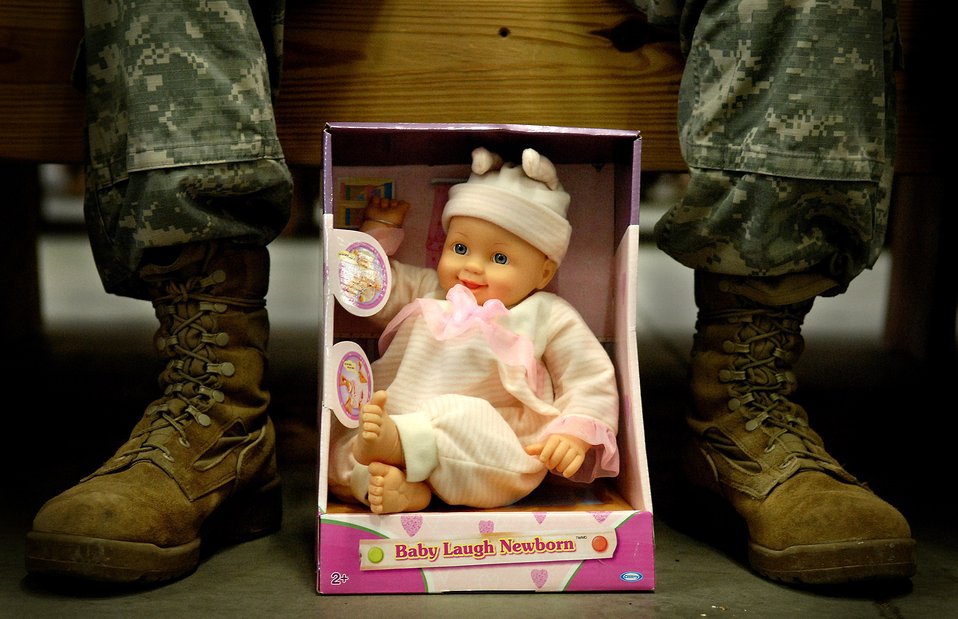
Spreading holiday cheer from above

A U.S. Army paratrooper from Fort Bragg, N.C., waits to give a doll to a child of a local family during Operation Toy Drop. Paratroopers participate in the annual operation by donating a toy in exchange for a chance to make a non-tactical parachute jump from a C-130 Hercules from Pope Air Force Base, N.C.